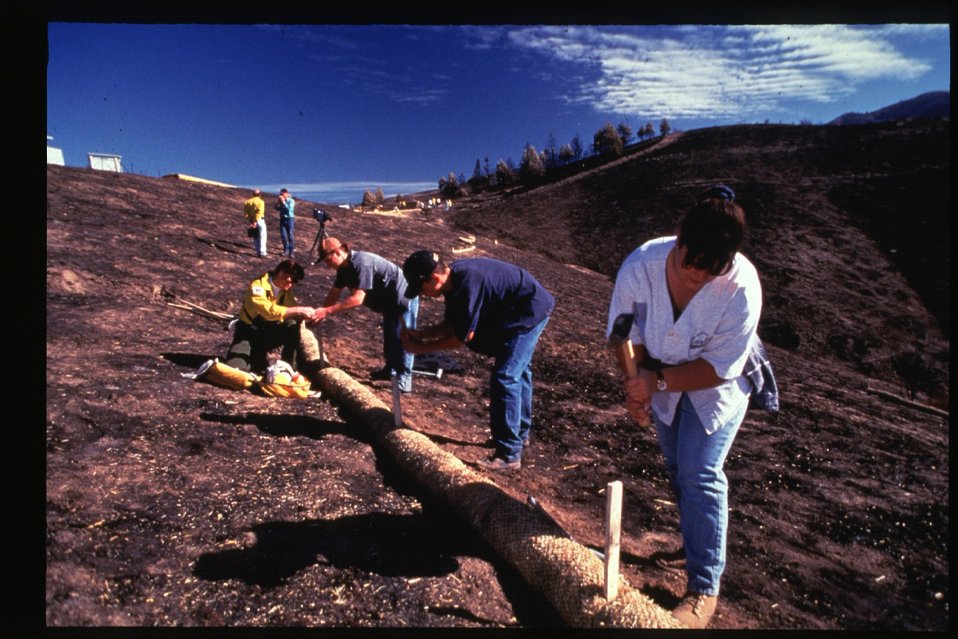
Fire 8th Street Fire Rehab Installing straw wattles Four Rivers Field Office LSRD Lower Snake River District